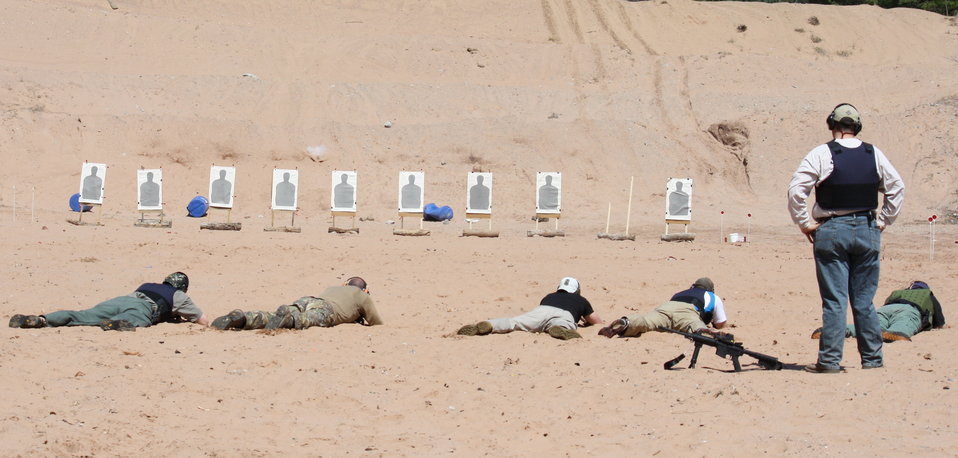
Agents on the Ground with AR-15s

Law Enforcement target practice at outdoor shooting range in Glastonbury, CT.